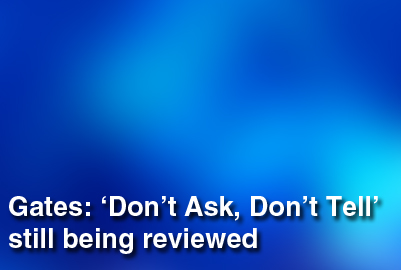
Don't Ask, Don't Tell